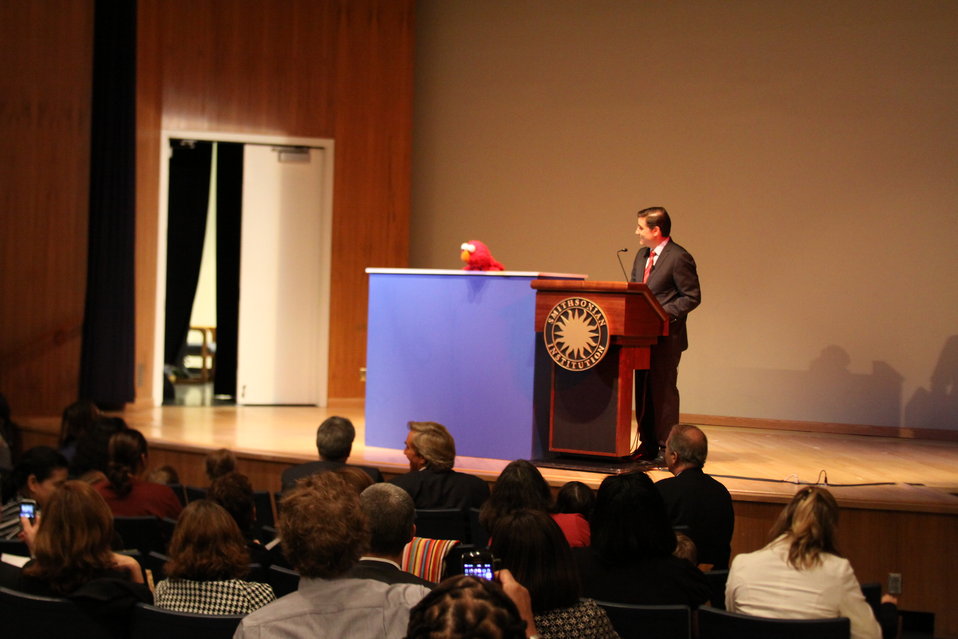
March 12, 2010- Smithsonian Broadband with Elmo